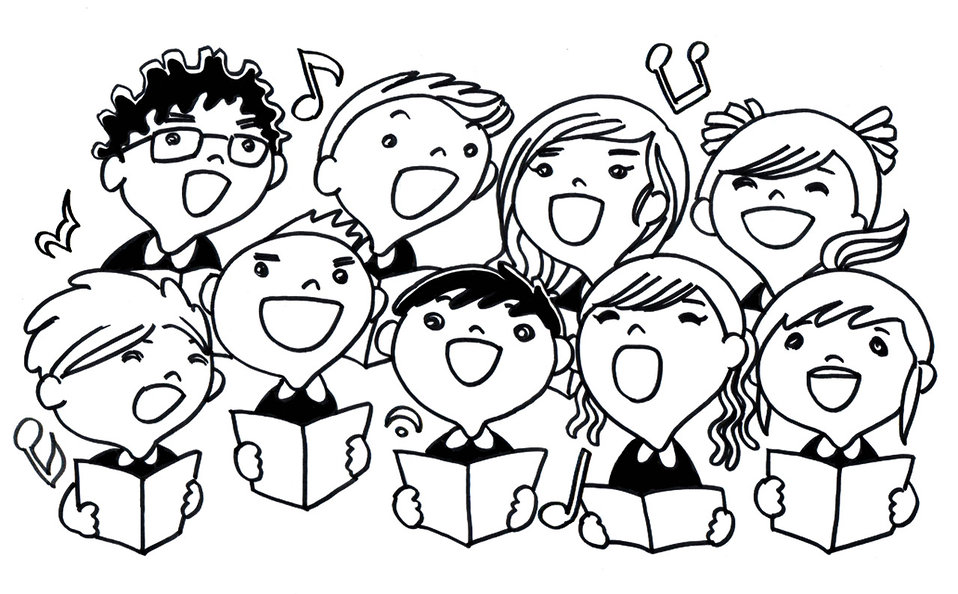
Singing children.